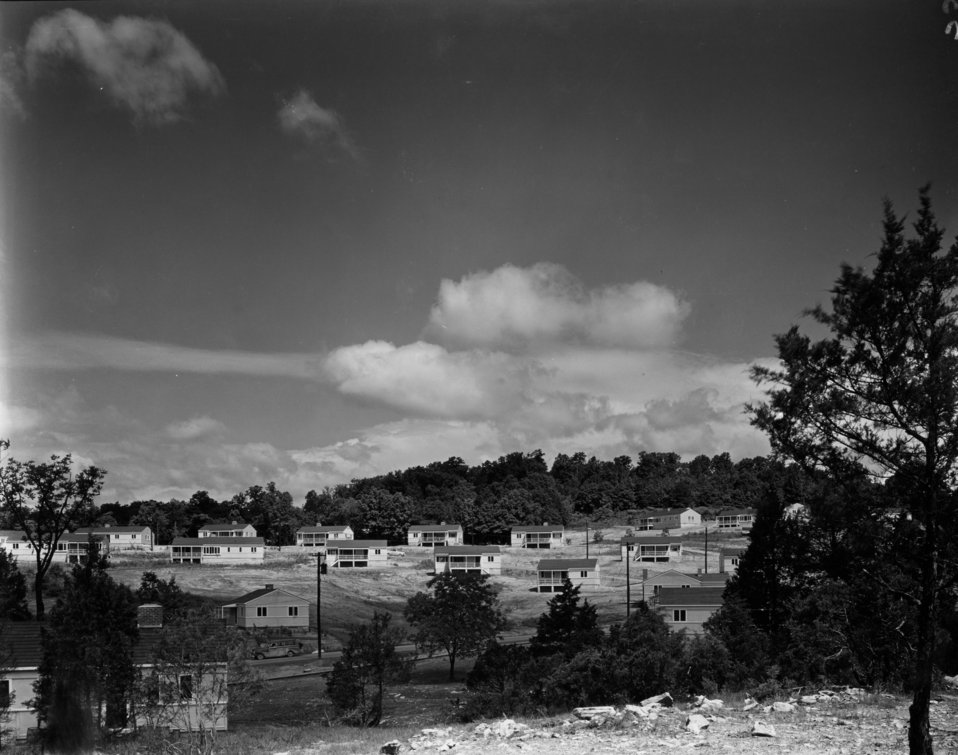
Housing at Oak Ridge